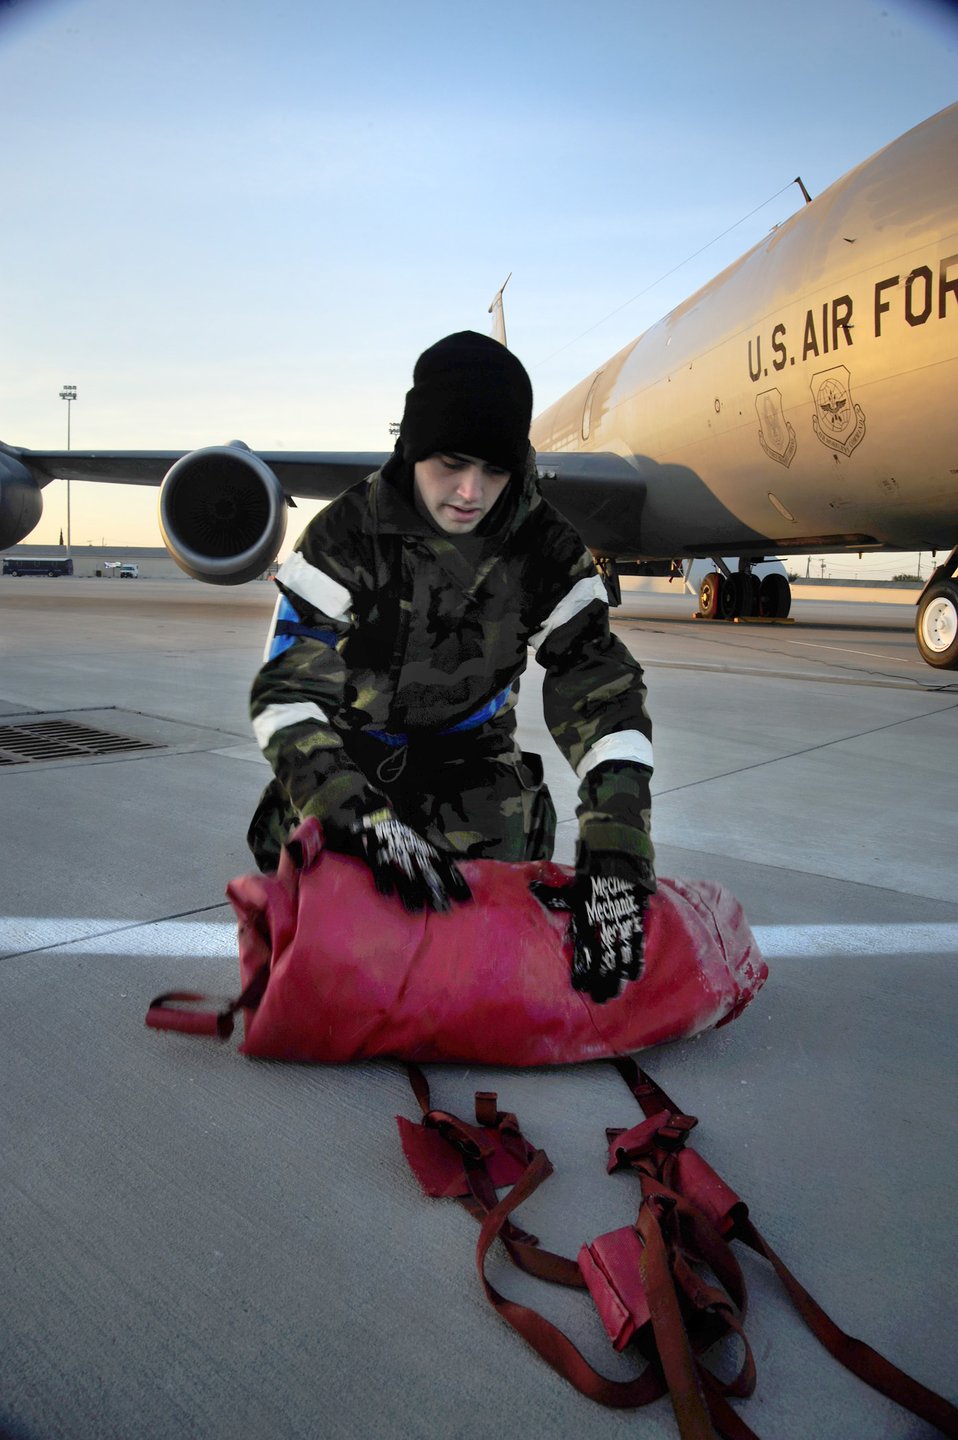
KC-135 Stratotanker maintenance

Airman 1st Class Cory Palmer rolls up a KC-135 Stratotanker engine cover Jan 27, 2011, during an operational readiness inspection at the Savannah Combat Readiness Training Center in Savannah, Ga. Airman Palmer is assigned to the 112th Aircraft Maintenance Squadron.